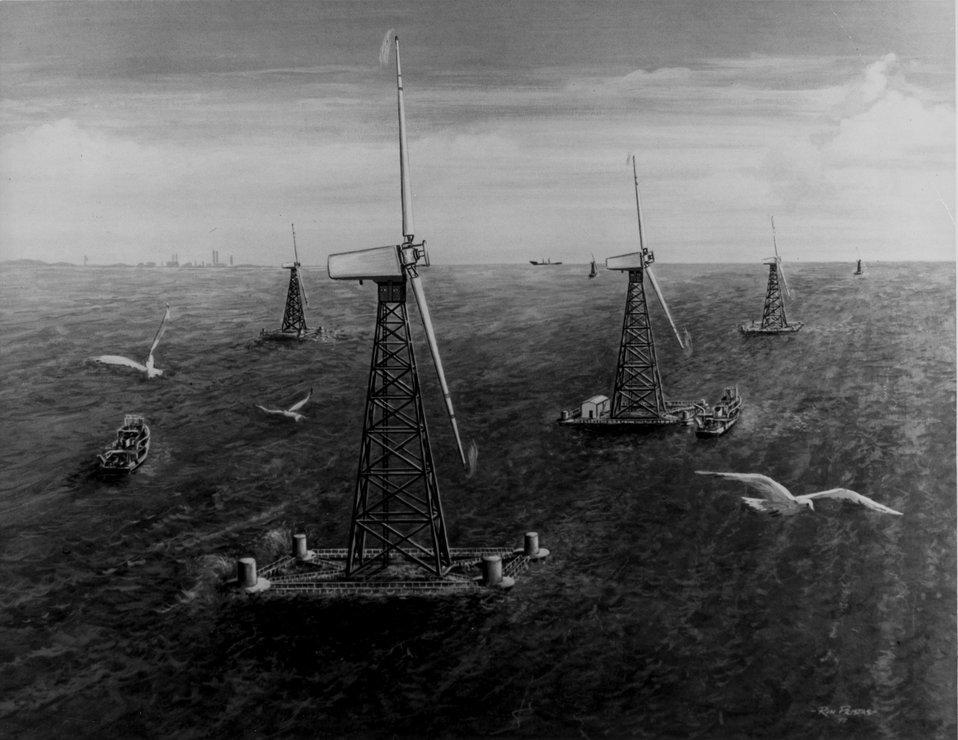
Some day there may be groups of large wind energy conversion systems in offshore areas near U.S. coastlines. c. 1977